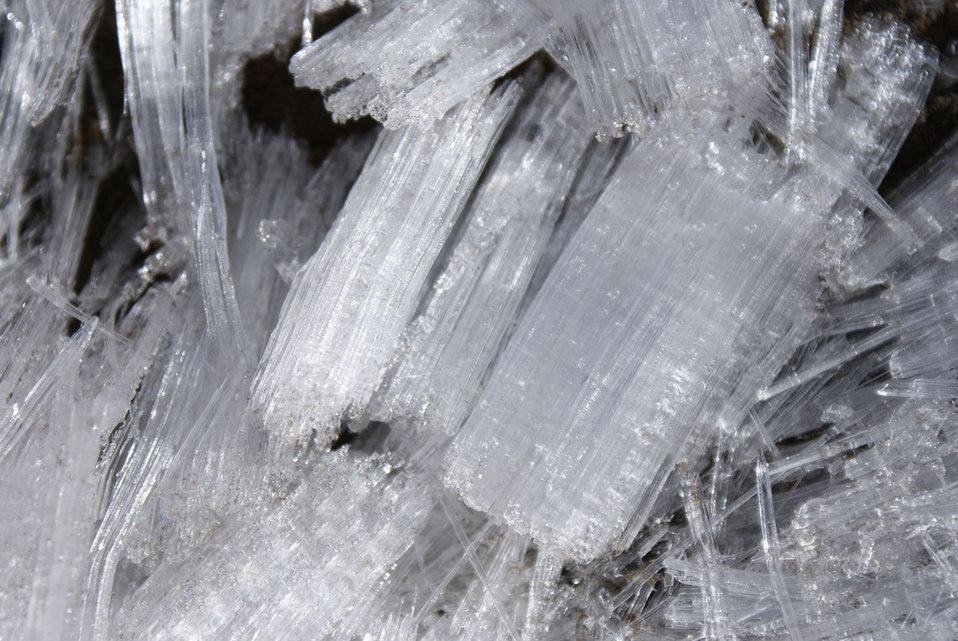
Ice crystals

These form in higher altitudes when moisture in the ground rises back out of the earth slowly, basically just like a reverse icicle..